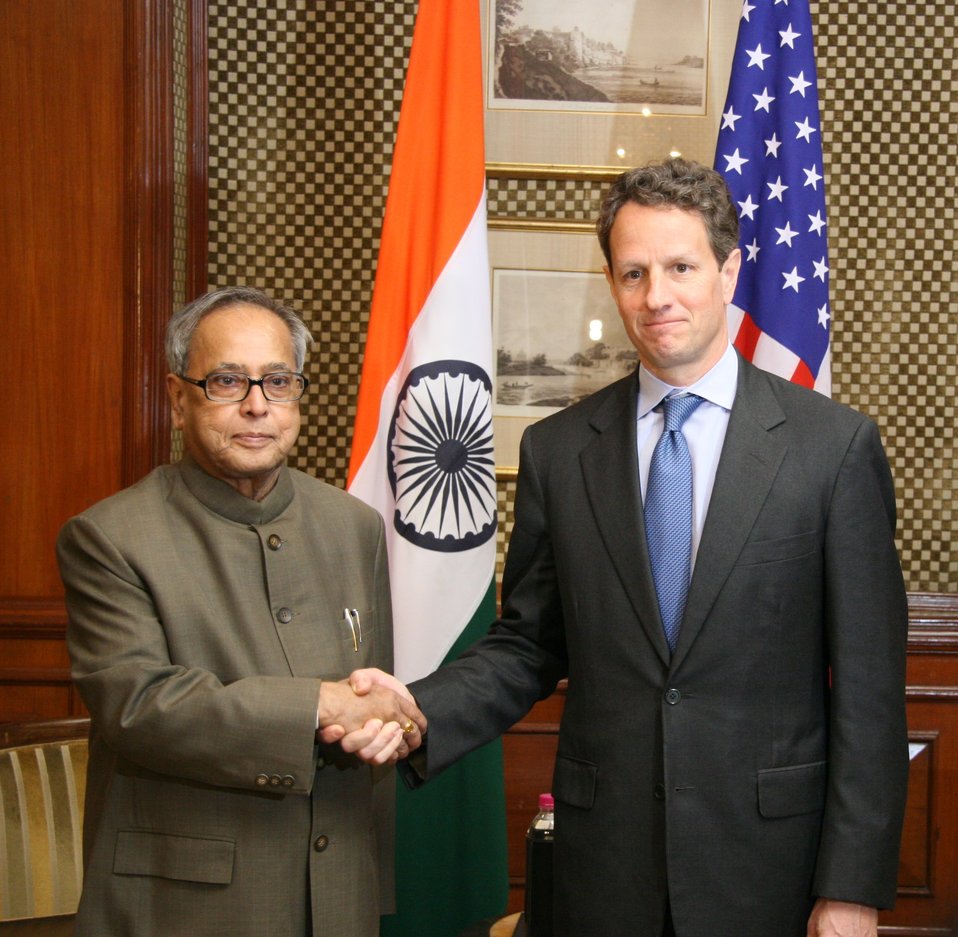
Secretary Geithner with Indian Finance Minister Mukherjee